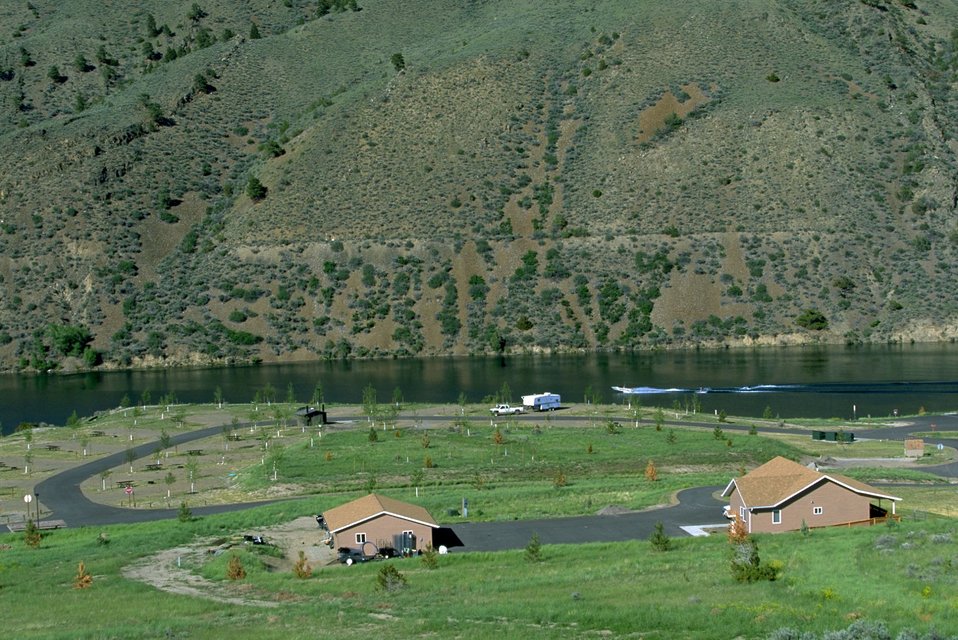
View of the campsites at Devils Elbow Campground